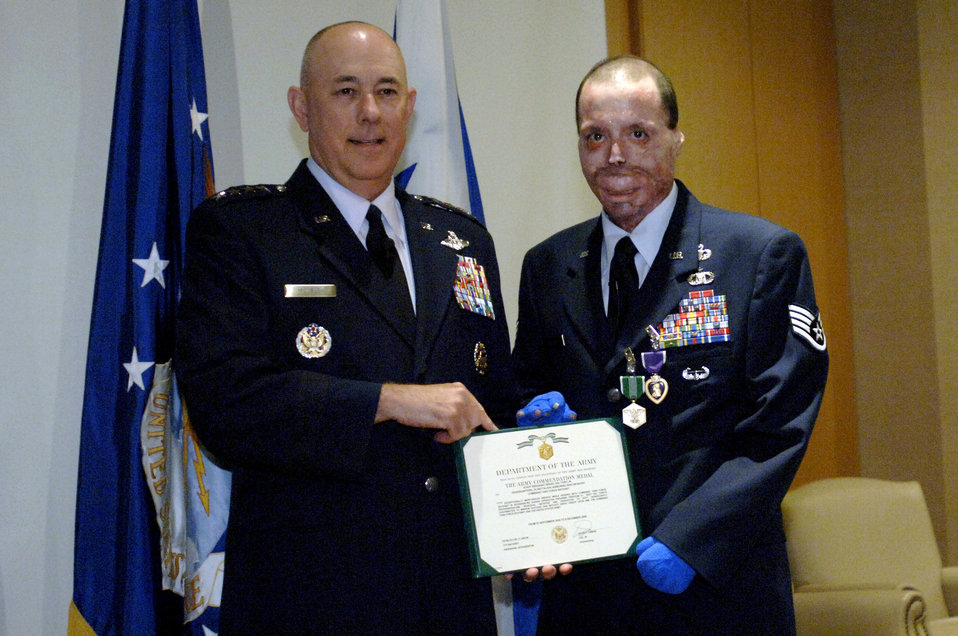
Purple Heart

Staff Sgt. Israel del Toro receives the Purple Heart Medal from Air Force Chief of Staff Gen. T. Michael Moseley at Fort Sam Houston, Texas. Sergeant del Toro was wounded during combat action in December 2005 while supporting Operation Enduring Freedom.